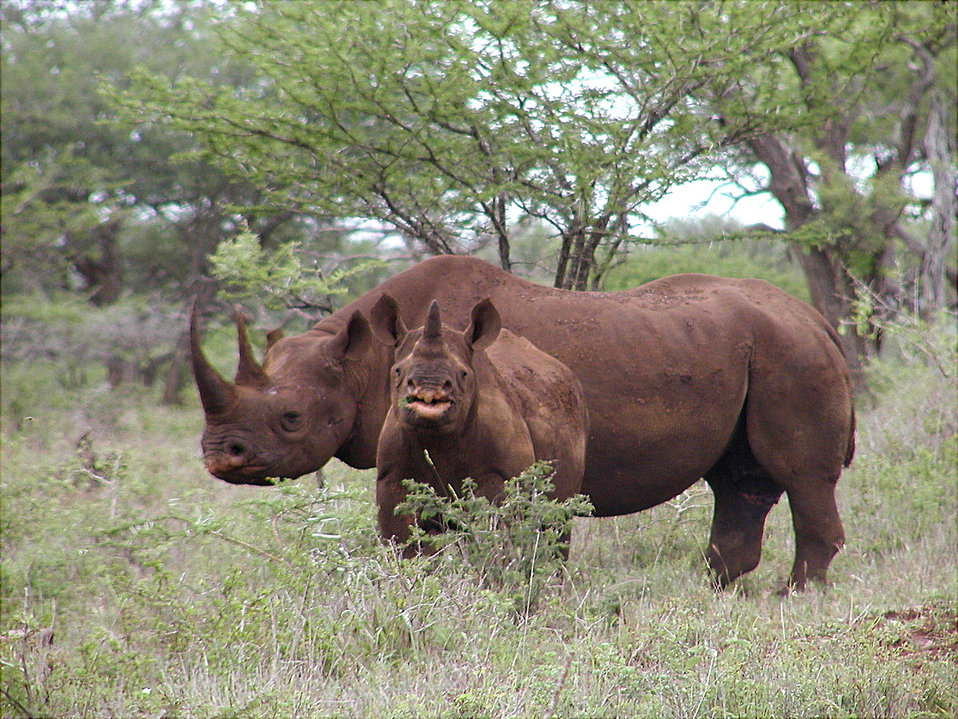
Black rhino with calf (male)

Male black rhino with calf in Mkhuze Africa.